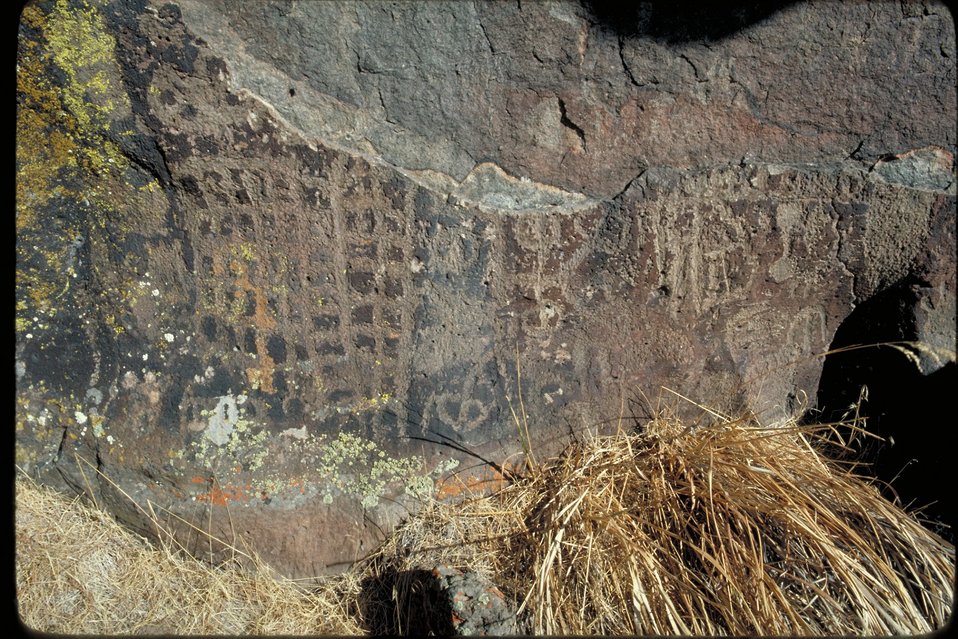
Petroglyphs near Blacks Creek Oregon Trail Lower Snake River District